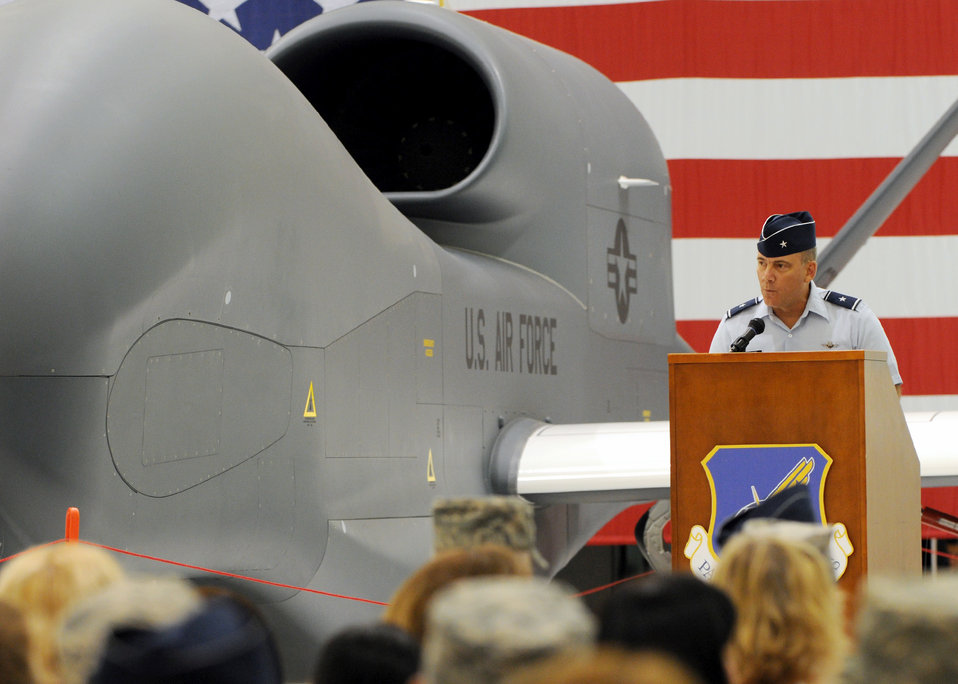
Global Hawk arrival ceremony

Brig. Gen. John Doucette addresses the audience during the Global Hawk arrival ceremony Sept. 20, 2010, at Andersen Air Force Base, Guam. The Global Hawk's mission is to provide a broad spectrum of ISR collection capability to support joint combatant forces in worldwide peacetime, contingency and wartime operations. The Global Hawk is operated by the 12th Reconnaissance Squadron at Beale AFB, Calif. General Doucette is the 36th Wing commander.